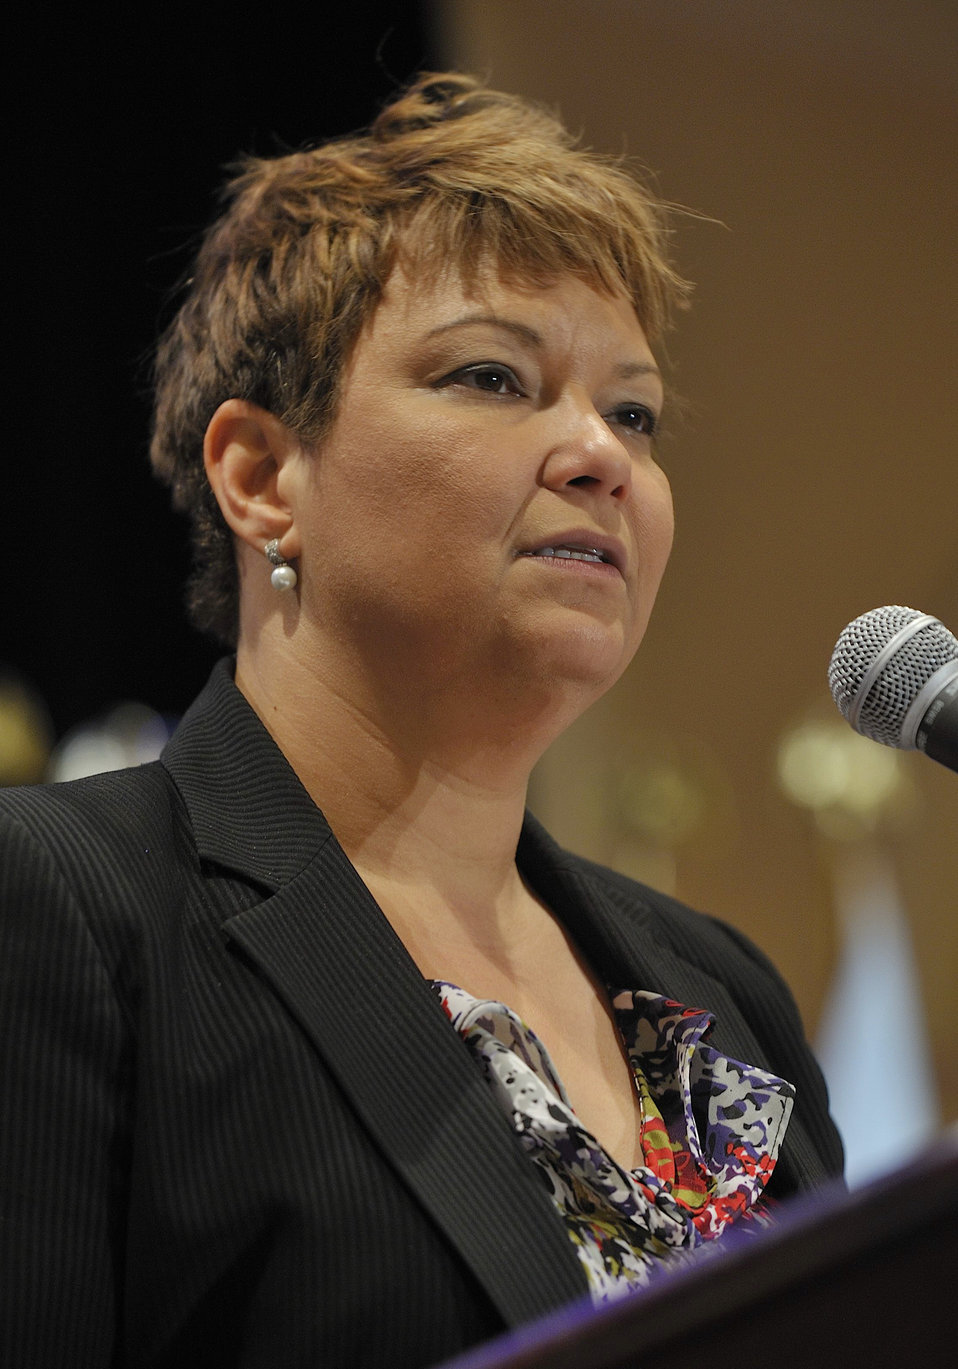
Tribal Energy Summit

EPA Administrator Lisa Jackson addresses DOE Tribal Summit during morning Keynote Address